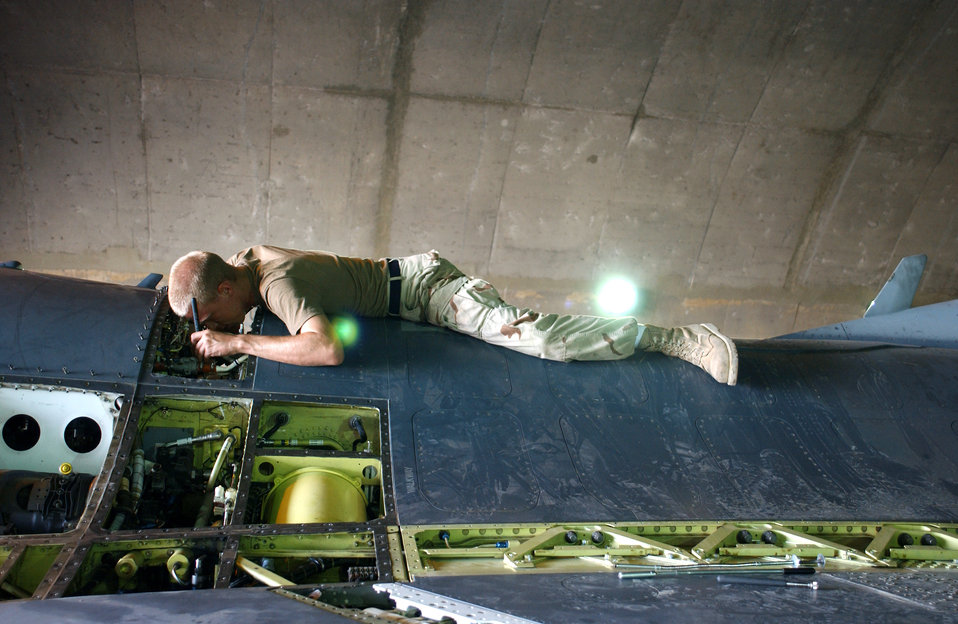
Maintenance teams work to keep F-16s flying

Senior Airman Shawn Campbell looks inside an F-16 Fighting Falcon during a phase inspection. Airman Campbell is assigned to the 332nd Expeditionary Maintenance Squadron.